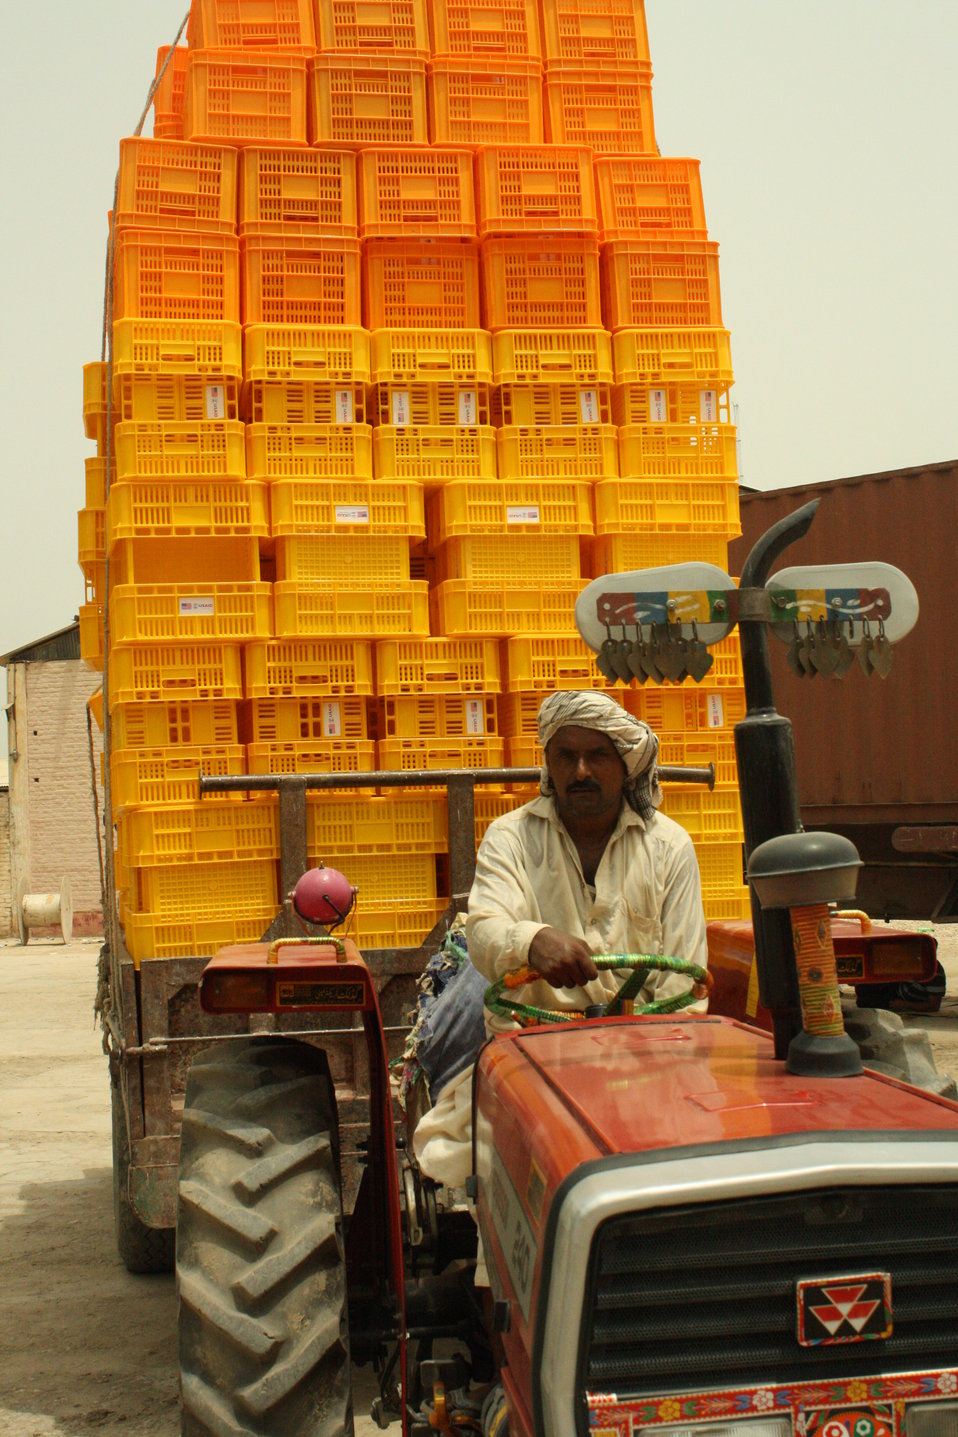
Assistance provided to date processing SMEs includes food-grade plastic crates, plastic palettes, cold stores, forklifts, metal detectors, and marketingbranding and packaging material designs.